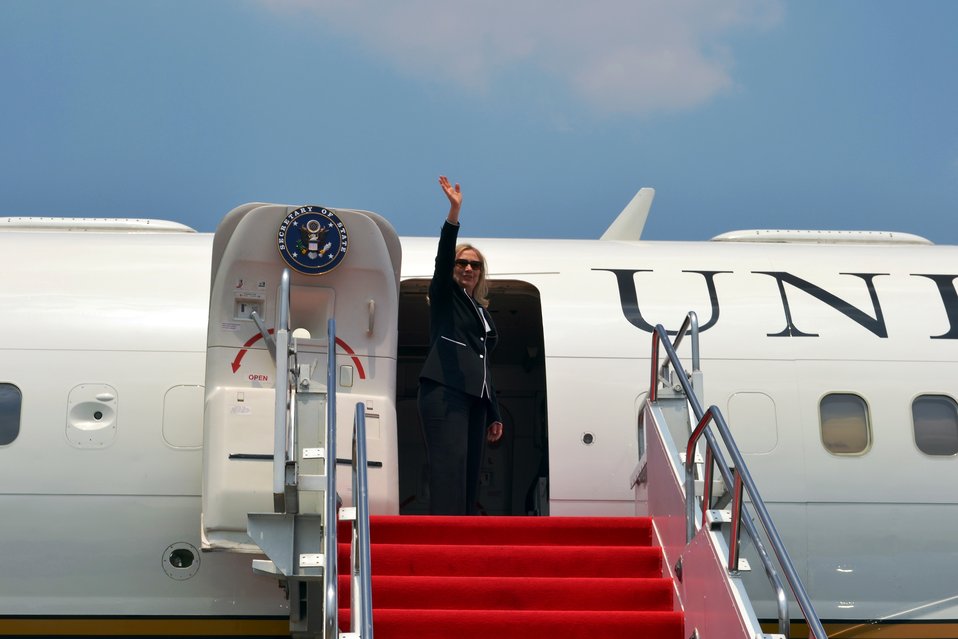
Secretary Clinton Waves Goodbye

U.S. Secretary of State Hillary Rodham Clinton waves goodbye to Jakarta, Indonesia, September 4, 2012.